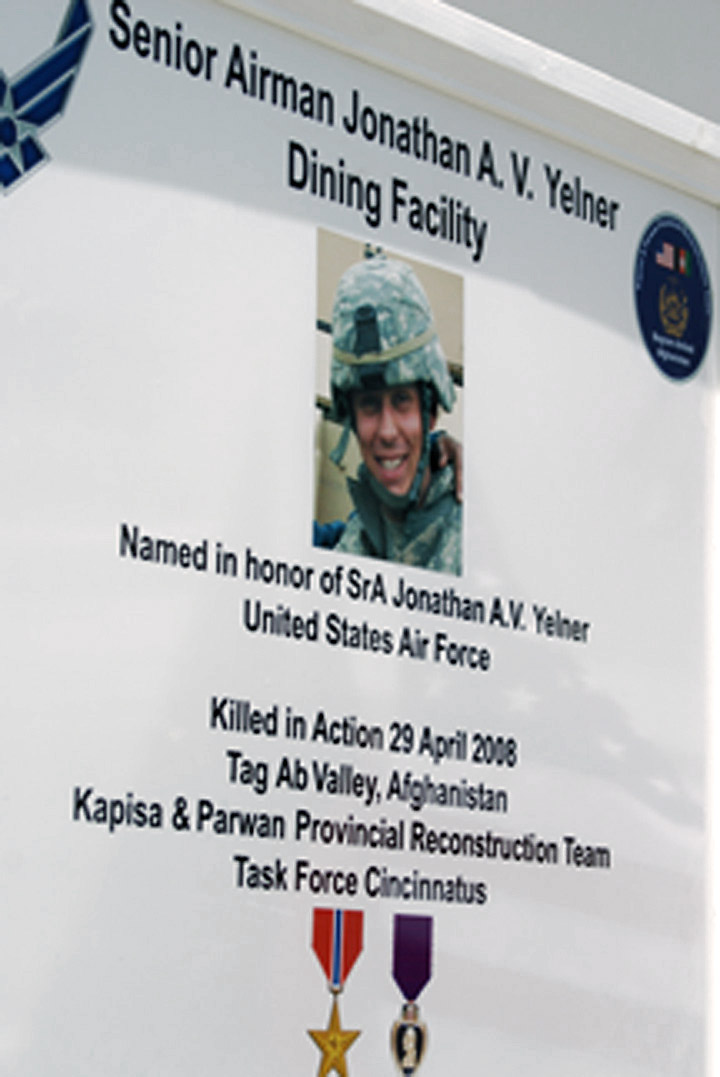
Bagram dedicates dining facility to fallen Airman

The Senior Airman Jonathan A.V. Yelner Dining Facility was opened July 6 on Bagram Air Field, Afghanistan. Airman Yelner, deployed from Ellsworth Air Force Base, S.D., was killed April 29 when an improvised explosive device detonated underneath his vehicle in Tag Ab Valley, Kapisa Province, Afghanistan.